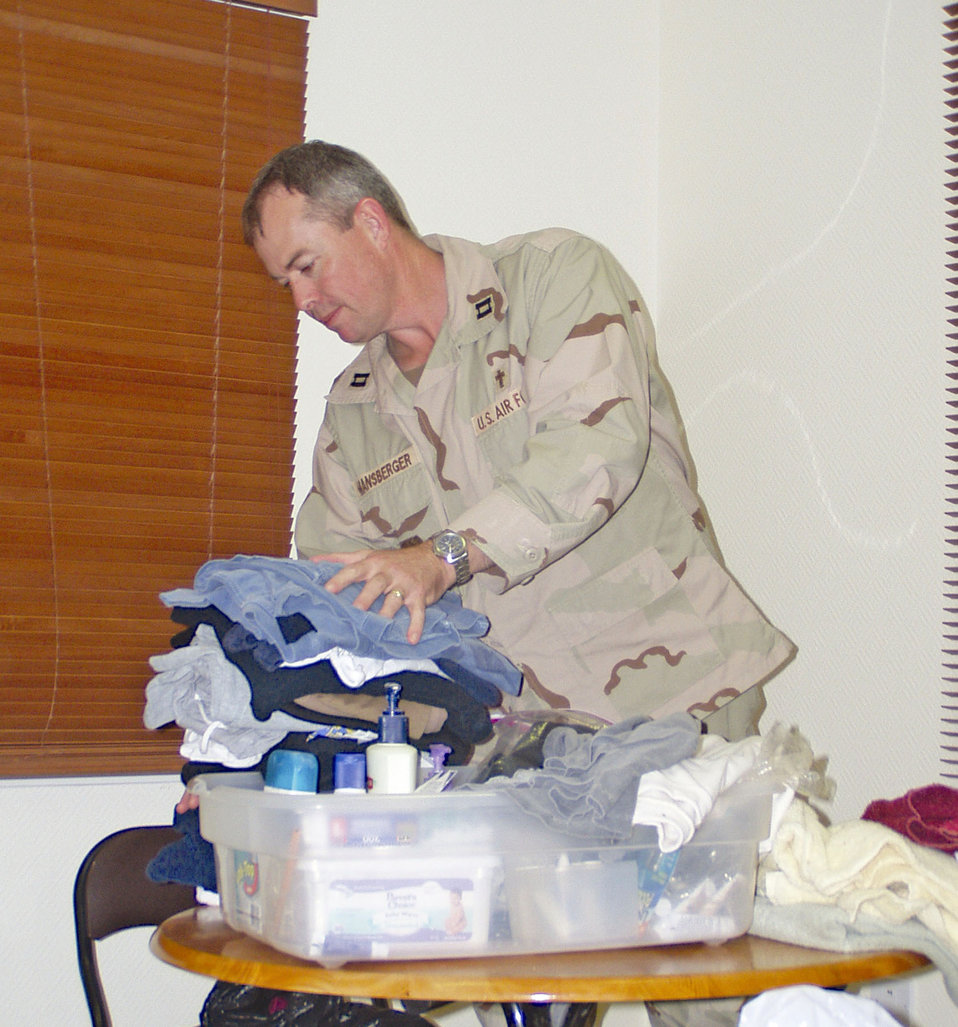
Deployed troops send relief to Southeast Asia survivors

SOUTHWEST ASIA -- Chaplain (Capt.) David Mansberger organizes clothes and toiletry items donated by people at a forward-deployed location here. Chapel officials are working with local churches to donate items to those in need.